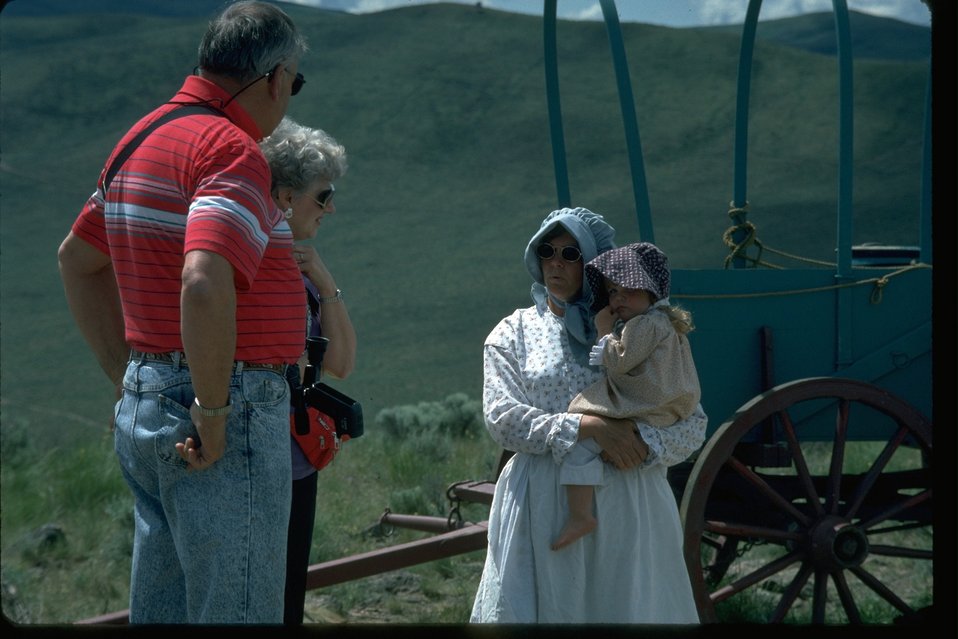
Visitors of the NHOTIC are speaking with pioneer woman.